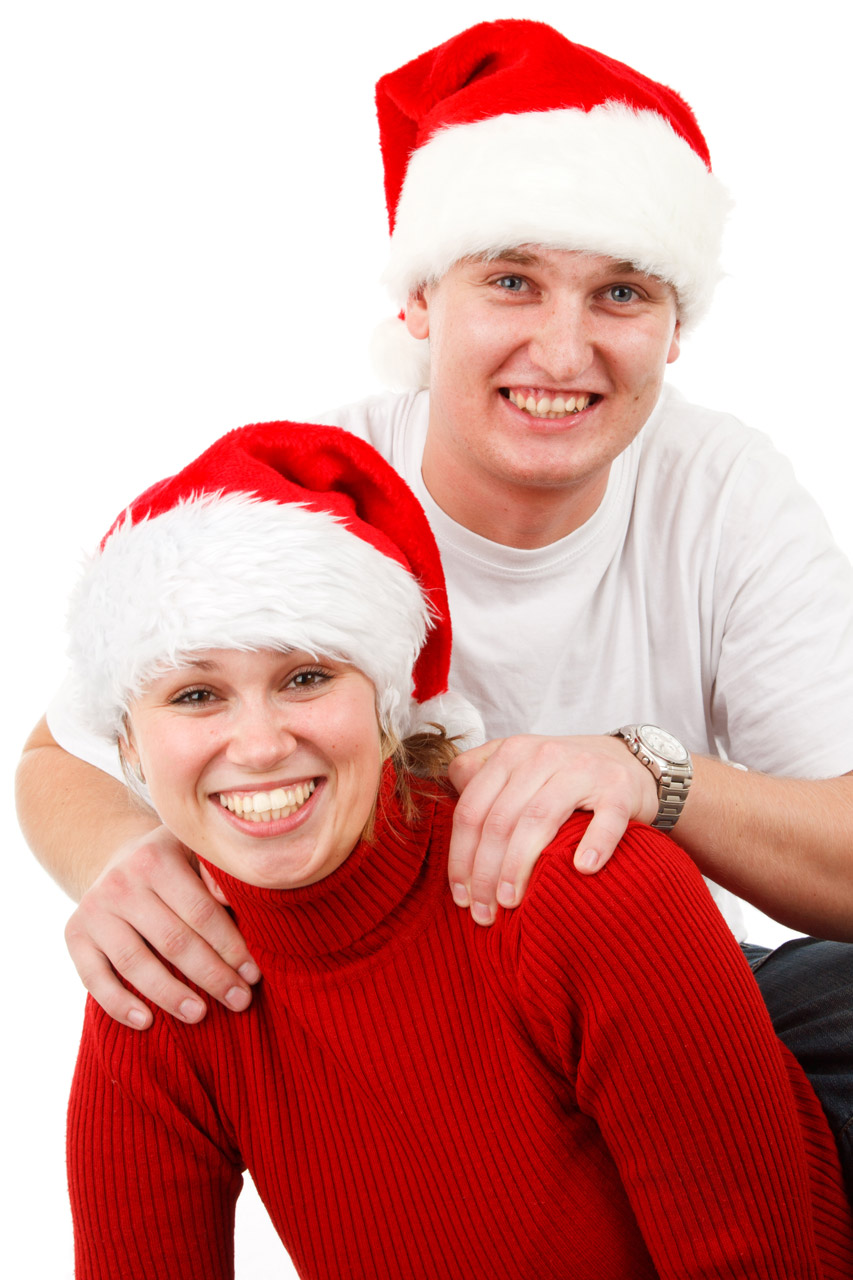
Smiling santa couple

Young santa couple smiling isolated on white background.